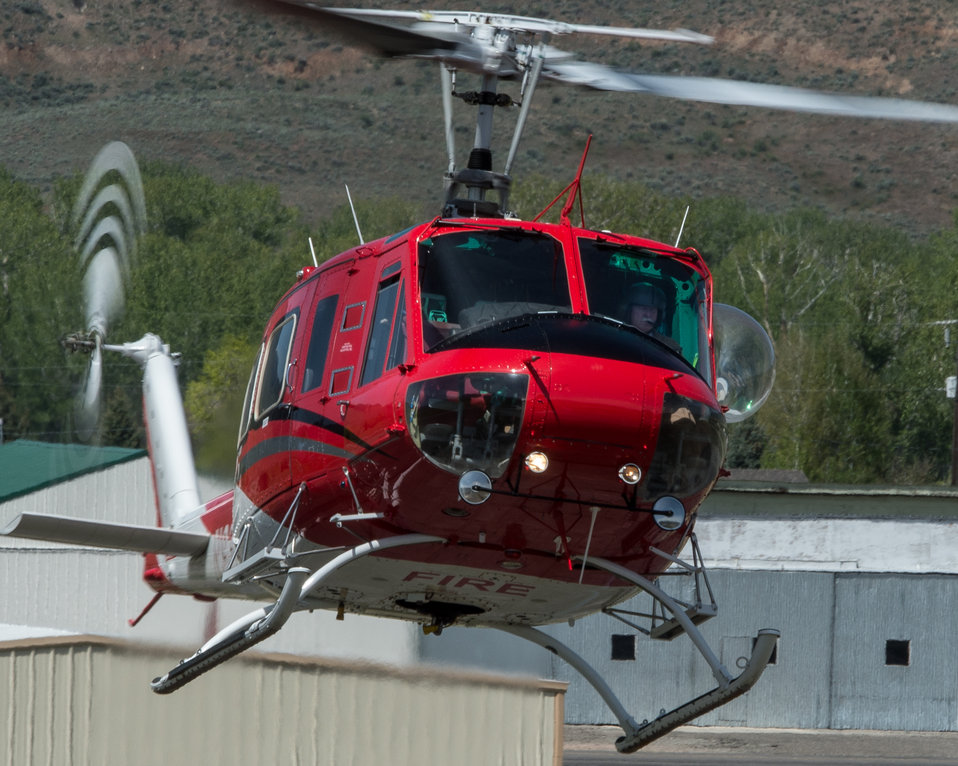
Heligroup Fire's Bell 205A-1 lands to take on a crew of veteran wildland firefighter rappellers at the U.S. Department of Agriculture (USDA) U.S. Forest Service (USFS) National Helicopter Rappel Program’s Rappel Academy at Salmon Air Base in Salmon, ID on Wednesday, May 14, 2014. From May 12, 2014, 72 veteran rappellers from all over the nation, 30 support staff, and three helicopters with flight crews attend the training at Salmon Air Base. Participants will rappel into the Perreau Creek area. The annual training is delivered in accordance with the National Rappel Operations Guide; strengthen leadership, teamwork, and communications within the rappel community, and produces quality aerial delivered firefighters for use in fire and aviation operations. The USDA Forest Service National Helicopter Rappel Program’s primary mission is initial attack. Rappel crews may be utilized for large fire support, all hazard incident operations, and resource management objectives.